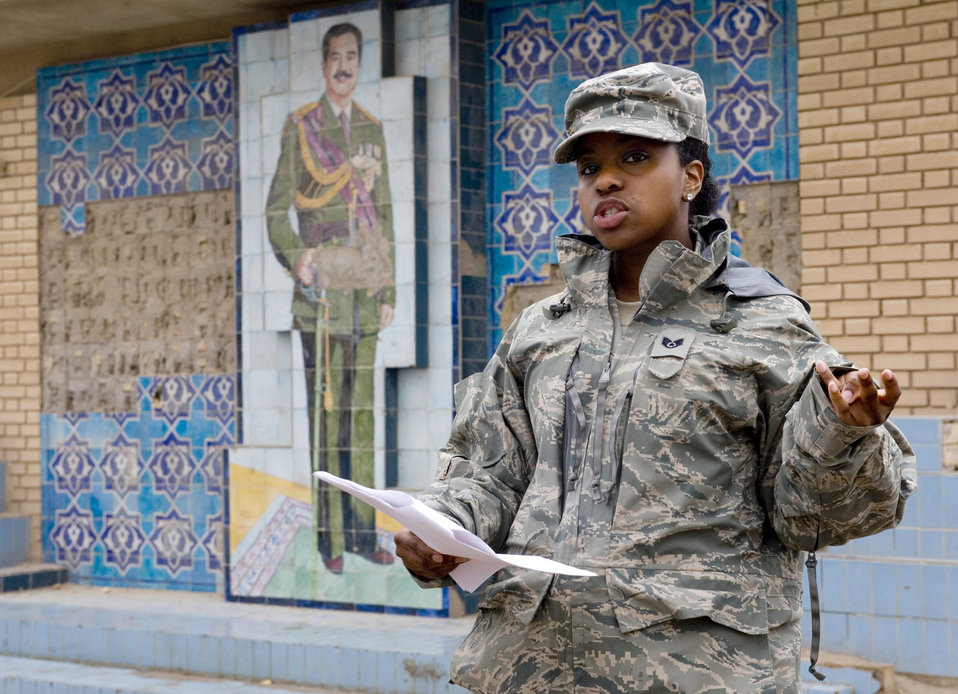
Chapel staff bolsters morale, mission focus from a unique perspective

Staff Sgt. Angela Ward talks about Saddam Hussein during a tour of historic buildings Jan. 29, 2011, in Baghdad, Iraq. The Sather Air Base Chapel runs tours of historic sites on a regular basis. Sergeant Ward is a 447th Air Expeditionary Group chaplain?s assistant.